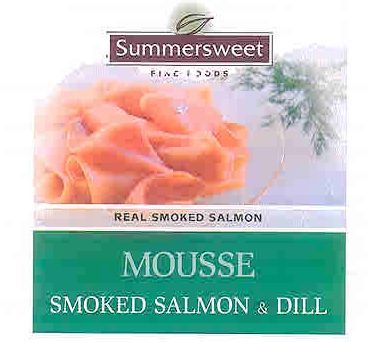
RECALLED - Dip and Mousse

April 15, 2011 - Product Recall - Charcuterie La Tour Eiffel Recalls Mousses and Dips.